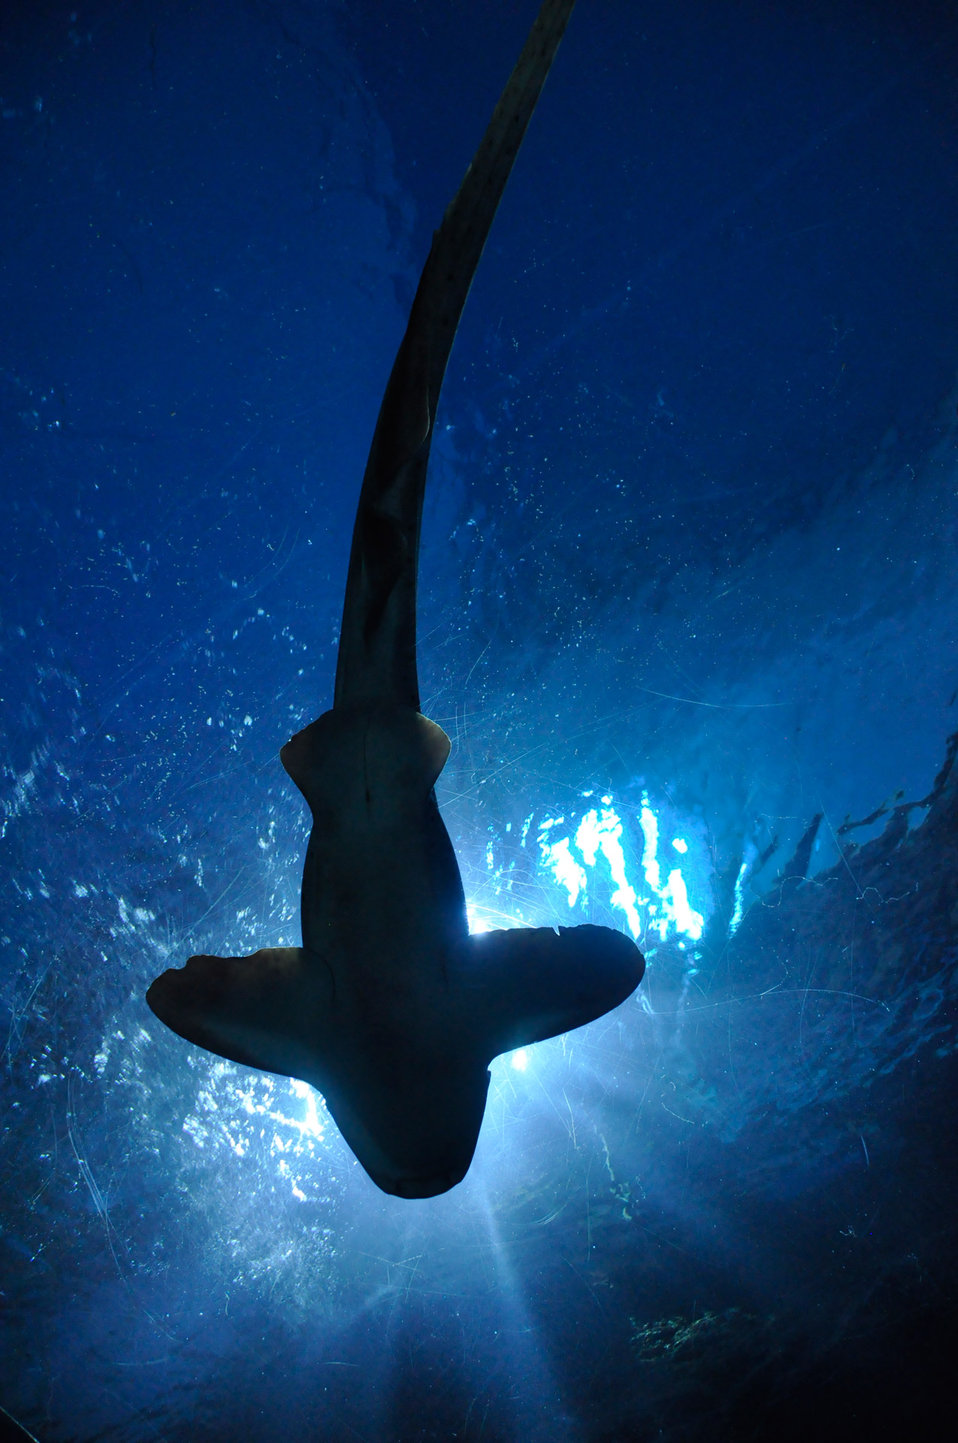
Shark

Hammerhead shark in the aquarium in bangkok - thailand.